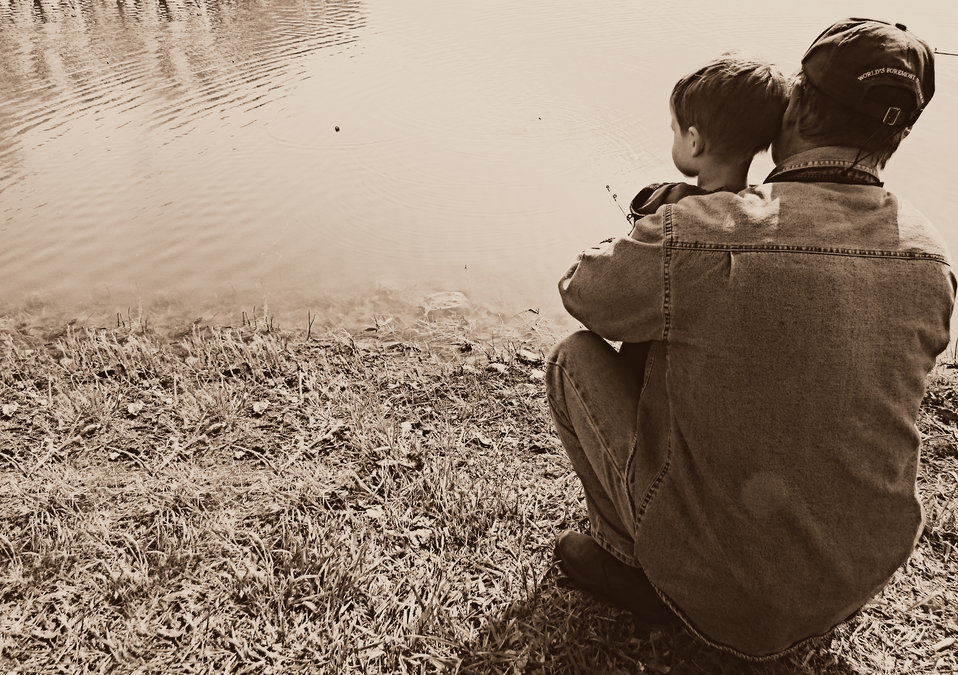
Fishing

The Kid's Fishing Derby was about more than catching fish.